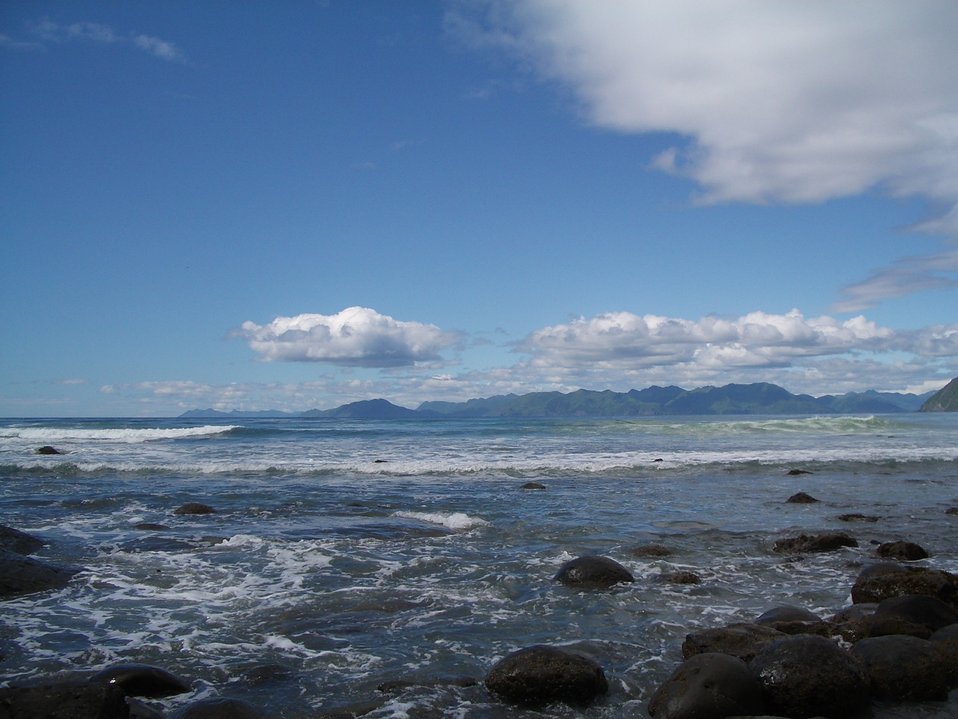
A mountainous coast along Kodiak Island.